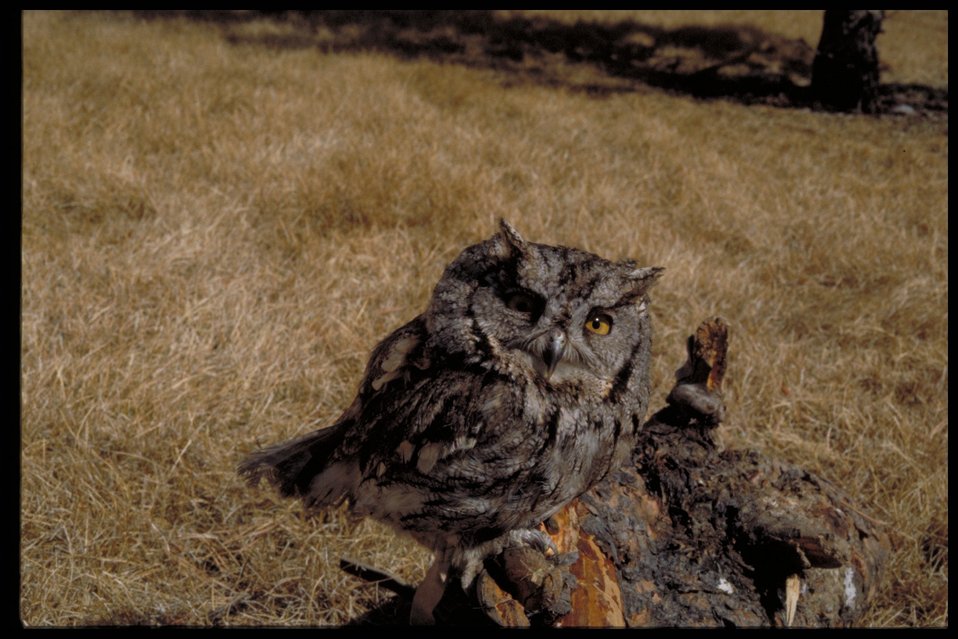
Screech Owl Birds of Prey National Conservation Area BOP Owyhee Field Office LSRD Lower Snake River District